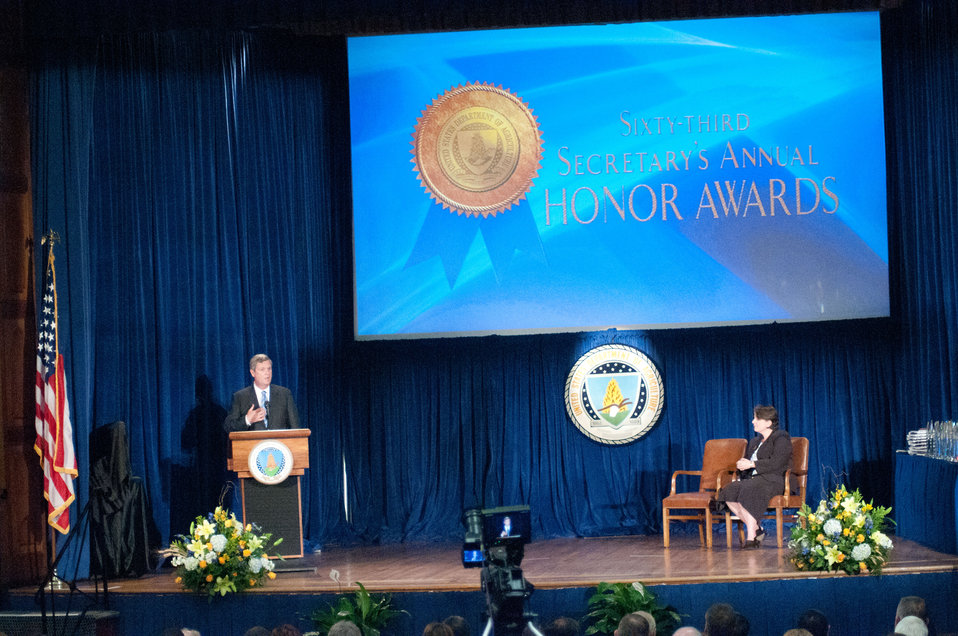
Agriculture Secretary Tom Vilsack makes remarks during the United States Department of Agriculture 63rd Secretary’s Annual Honor Awards ceremony held in the Thomas Jefferson Auditorium in Washington, D.C. on Wednesday, September 14, 2011.